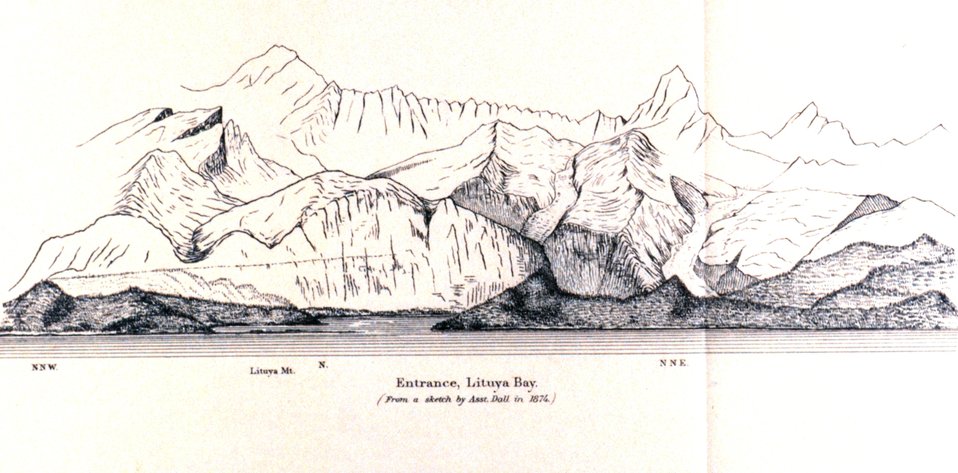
Entrance Lituya Bay. In: Pacific Coast Pilot Alaska Part I 1883. P. 202. Library call number VK943 .N3 1883.